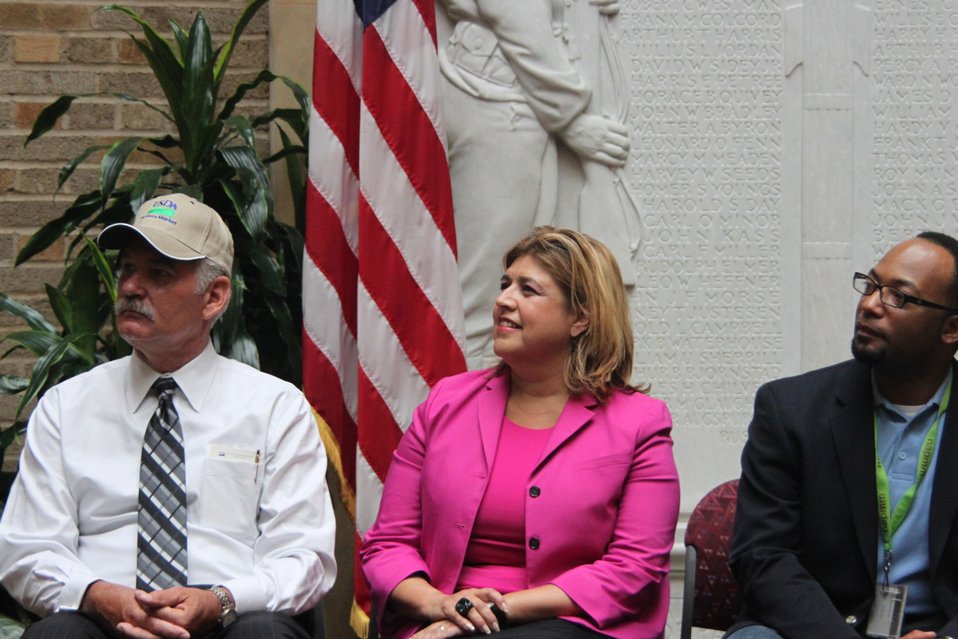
Scuse, Alonzo and Neal

Agriculture Acting Deputy Secretary Michael Scuse and U.S. Department of Agriculture (USDA) Agricultural Marketing Service (AMS) Administrator Alonzo listen to Washington Redskins player Reed Doughty speak at the opening of USDA's Farmers Market on Friday, Jun. 7, 2013.